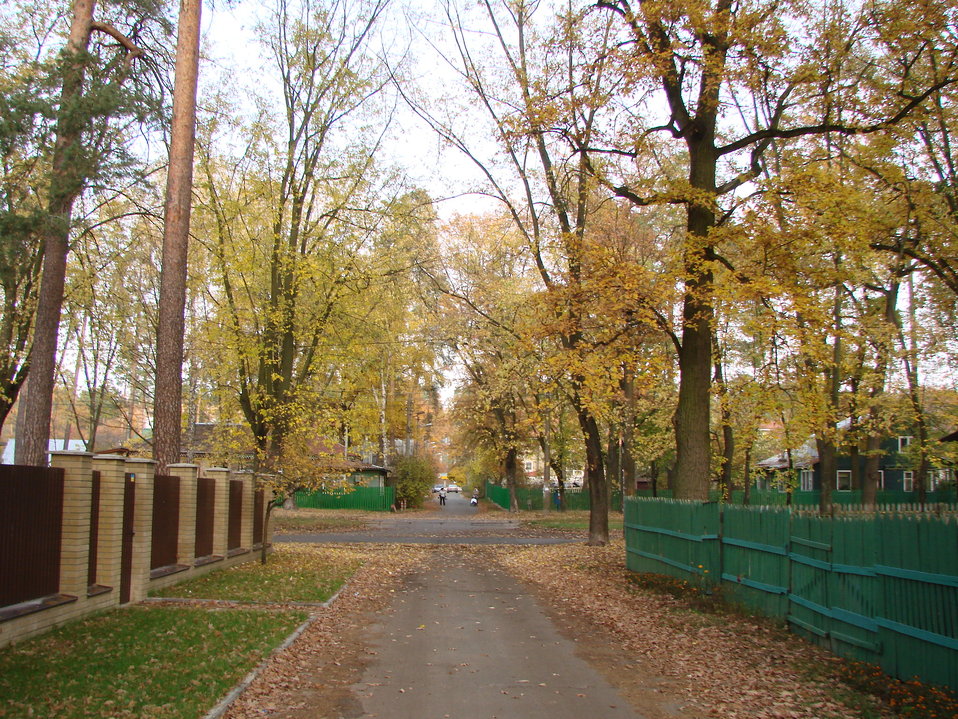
Українська: 14-а Лінія у Києві, Пуща-Водиця